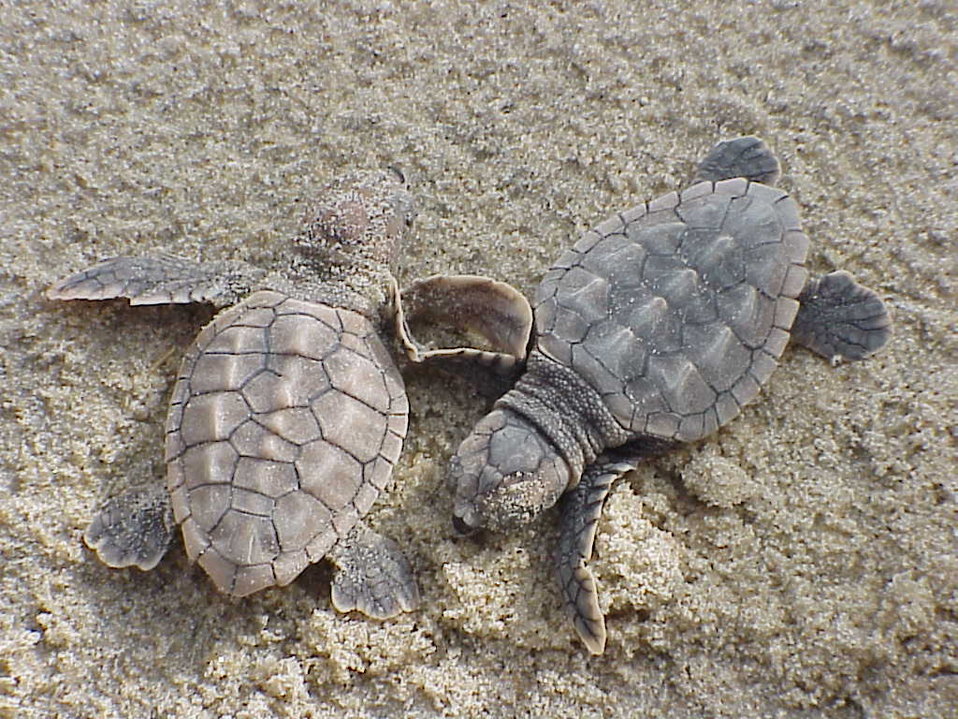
Photo of the Week - Loggerhead sea turtle hatchlings at Back Bay National Wildlife Refuge, VA

Photo of the Week - 2/14/11

Happy Valentine's Day! Loggerhead sea turtle hatchlings at Back Bay National Wildlife Refuge in Virginia.